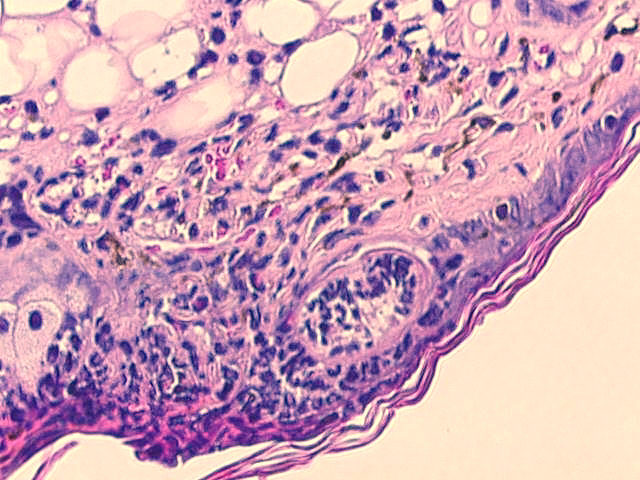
Schistosomulum in skin of a vaccinated mouse.